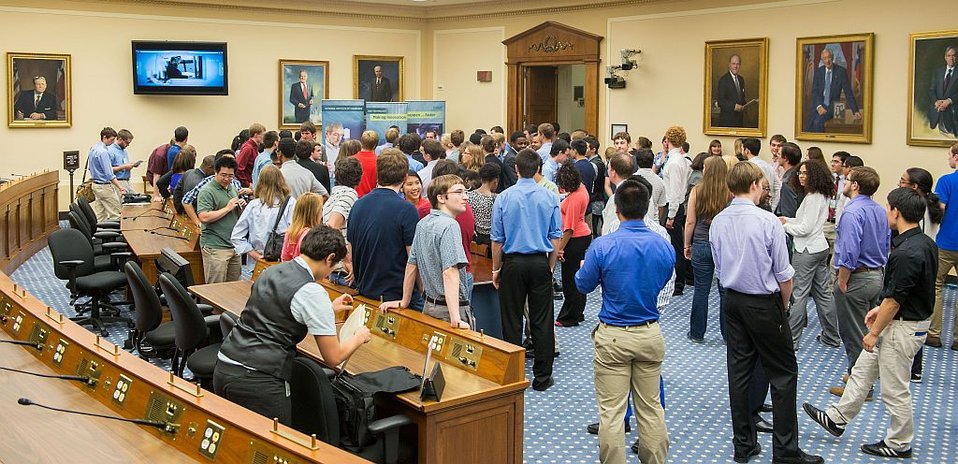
SURF Students at the U.S. House of Representatives

NIST 2013 Summer Undergraduate Research Fellows arrive at the U.S. House of Representatives Science Committee Hearing Room to meet with congressmen from their districts.